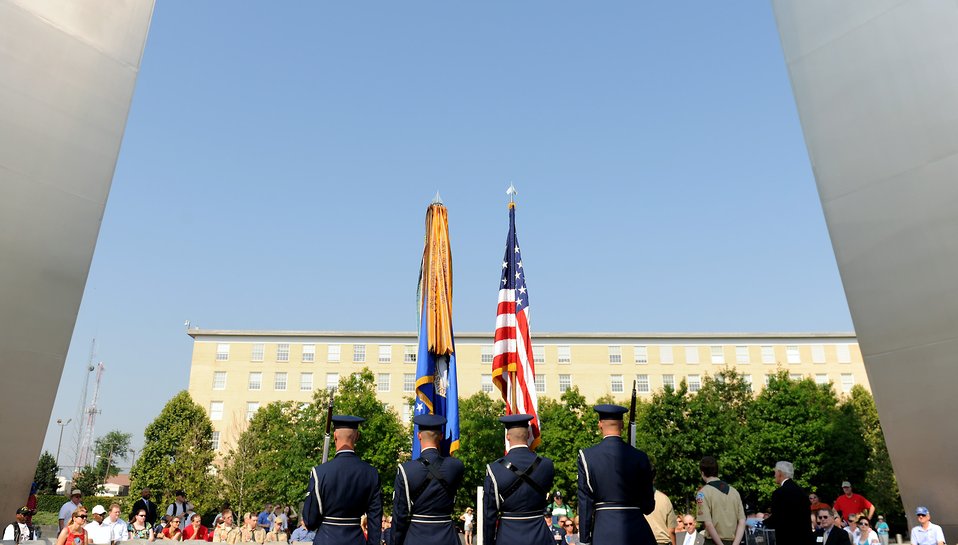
CMSAF Reads Honors Fallen on Memorial Day

About 100 people observe a Memorial Day ceremony May 30, 2011, honoring those who gave their lives in service in the last year. The ceremony was at the Air Force Memorial in Arlington, Va., and hosted by the Air Force Association and the Air Force Sergeants' Association. During the ceremony, Chief Master Sgt. of the Air Force James Roy read the names of each of the Airmen who died in combat in the past year.